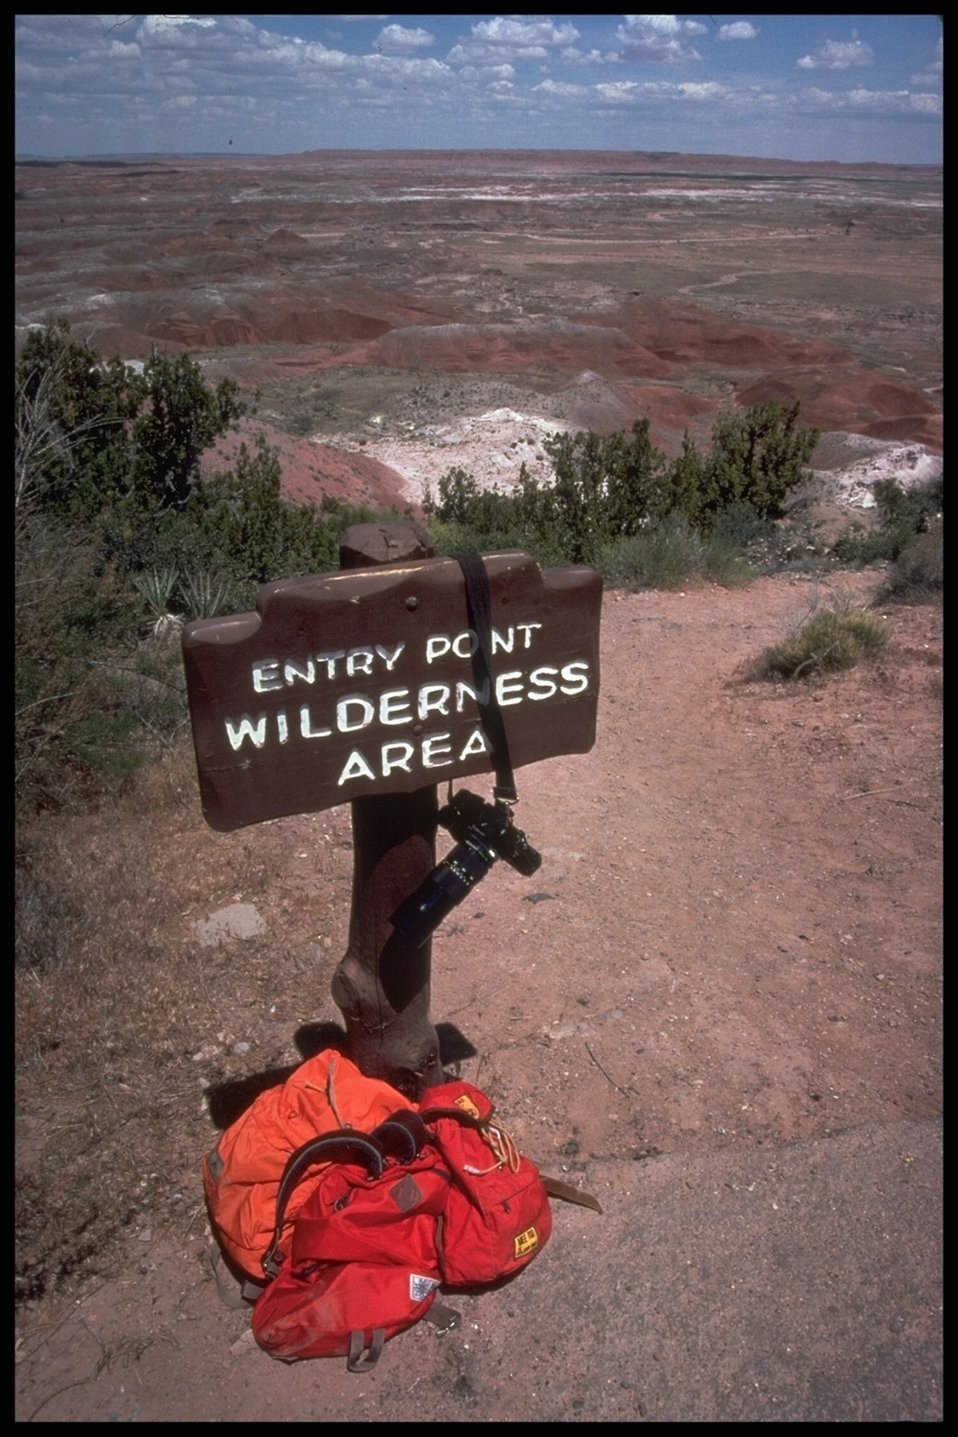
Photo opportunities await on Arizona's public lands.